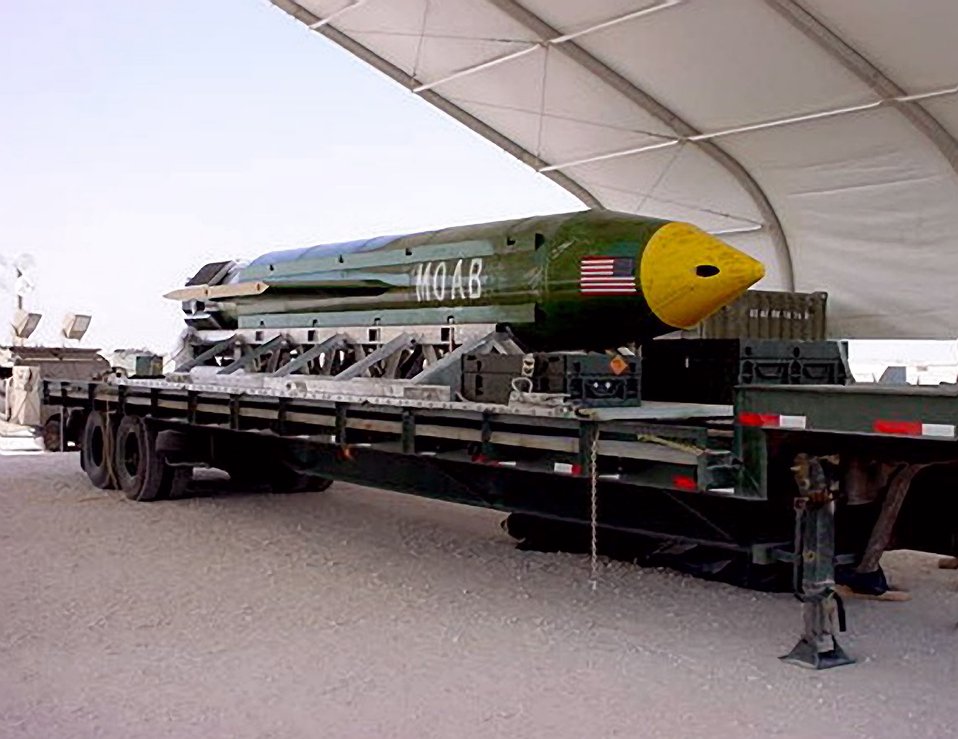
The 'Mother of All Bombs'

The GBU-43/B Massive Ordnance Air Blast bomb sits at an air base in Southwest Asia waiting to be used should it become necessary. The MOAB is also called